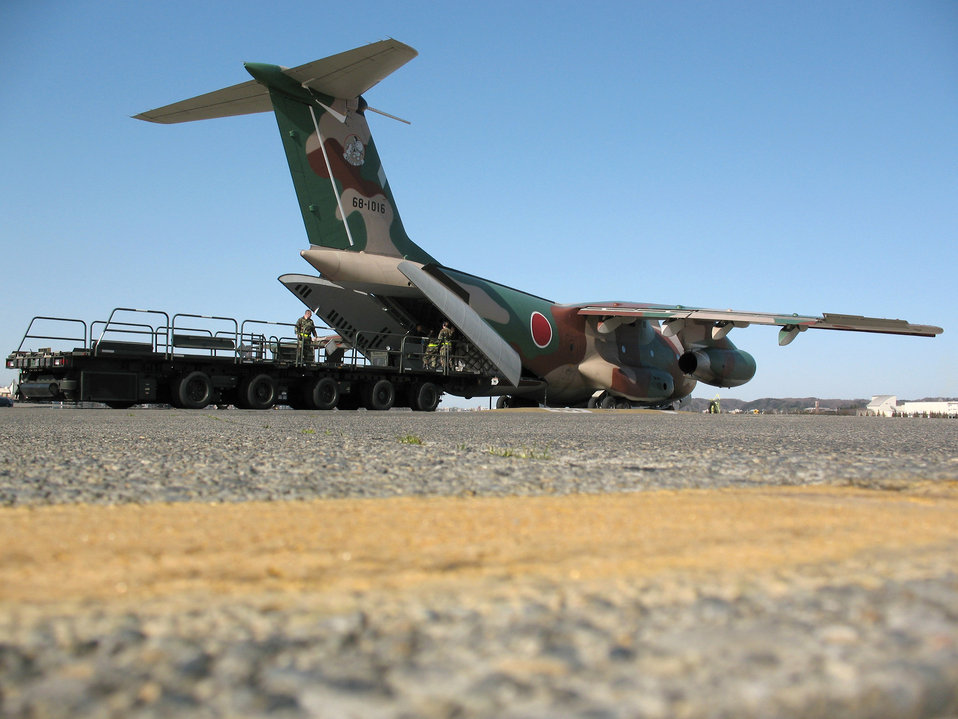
Japanese, American forces team up in war on terrorism

A Japan Air Self-Defense Force C-1 receives a load of cargo during Operation Freedom Lift Feb. 27 at Yokota Air Base, Japan. The plane was headed to Kadena Air Base, Okinawa, to deliver the cargo while simultaneously allowing U.S. planes to fly war on terrorism missions.